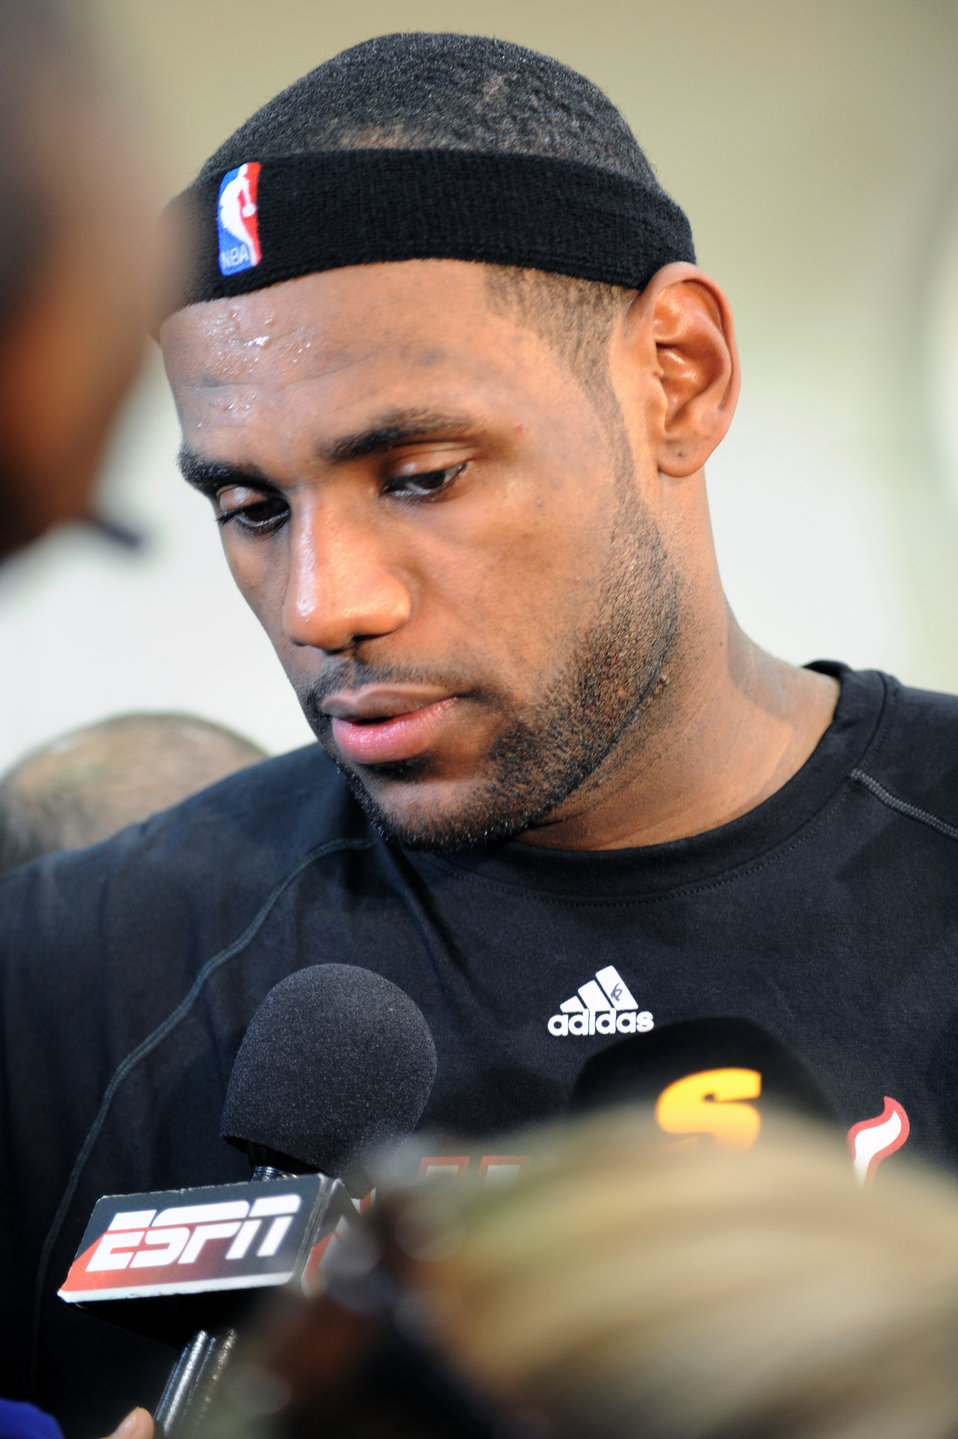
Miami Heat at Hurlburt

NBA player LeBron James answers questions during a press conference after a preseason practice session Sept. 28, 2010, at the Aderholt Fitness Center at Hurlburt Field, Fla. The Miami Heat used the fitness center for their week-long training camp. James is a forward for the Heat.